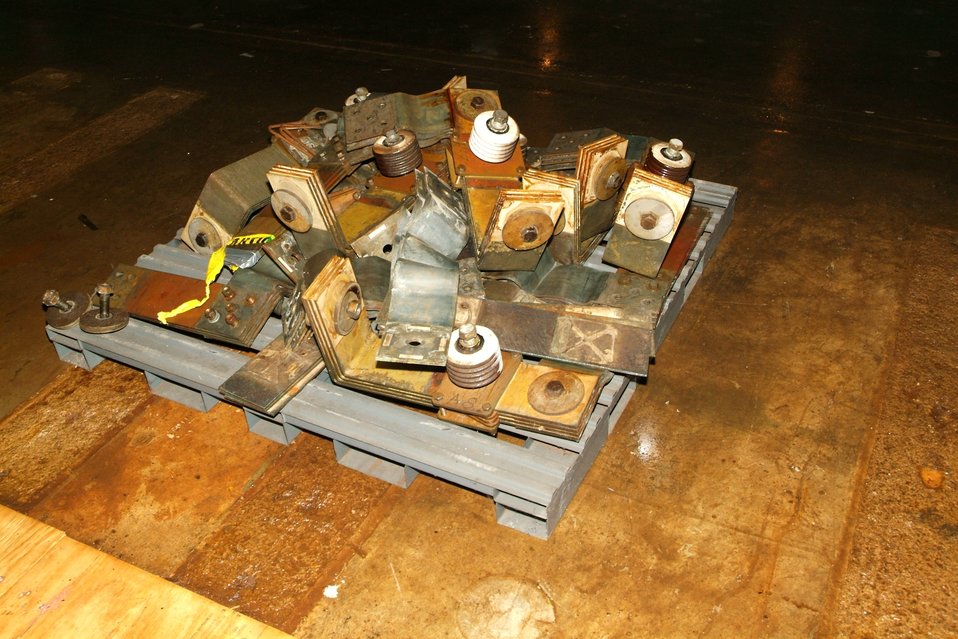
C-410 bus bar pallet

Having saved millions of dollars cleaning up and tearing down an old smelter in September 2010, Recovery Act workers at the Paducah Site are moving on to demolish other closed facilities by September 2011.